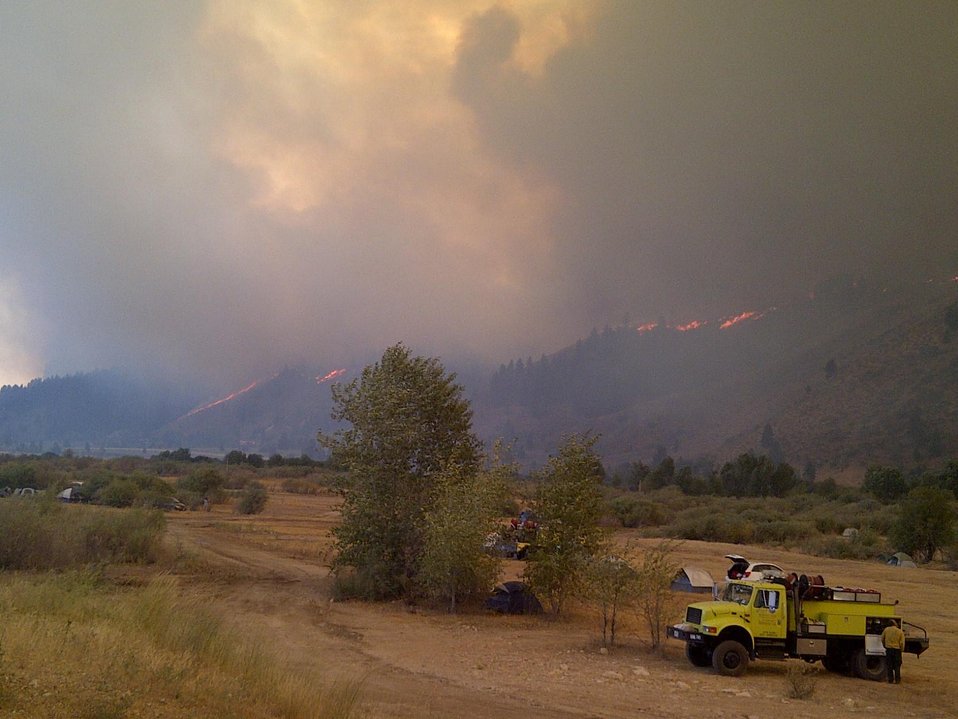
A heavy smoke plume rises from the Elk Fire Complex Fire. The Elk Complex Fire in the Boise National Forest near Pine, ID began on Aug. 08, 2013 by lightning has consumed approximately 98,413 acres and is approximately 5% contained.